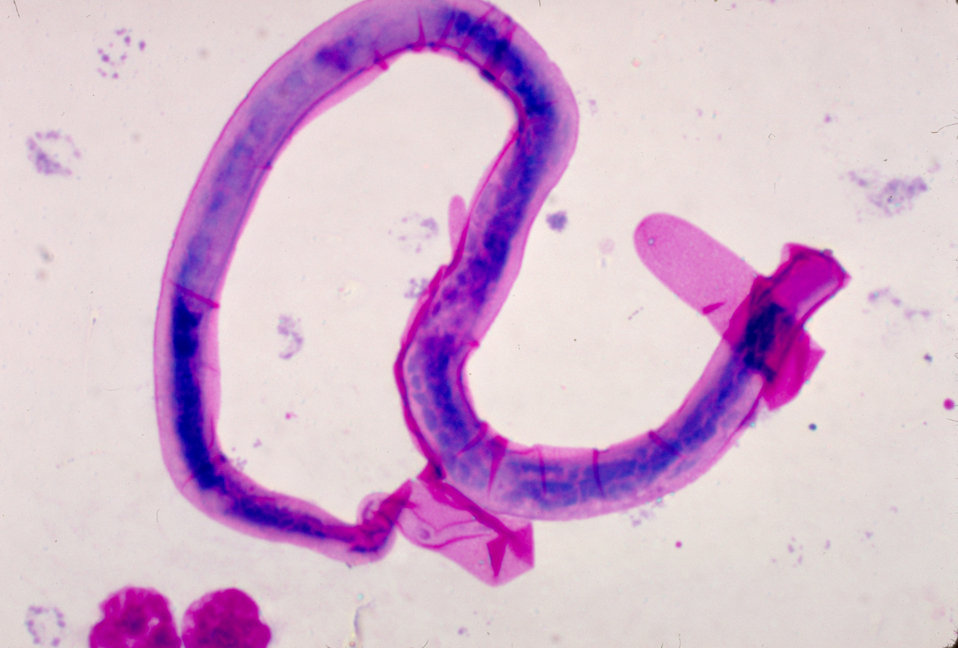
This is a micrograph of the posterior end of a Brugia pahangi microfilaria in thick blood smear using Giemsa stain.